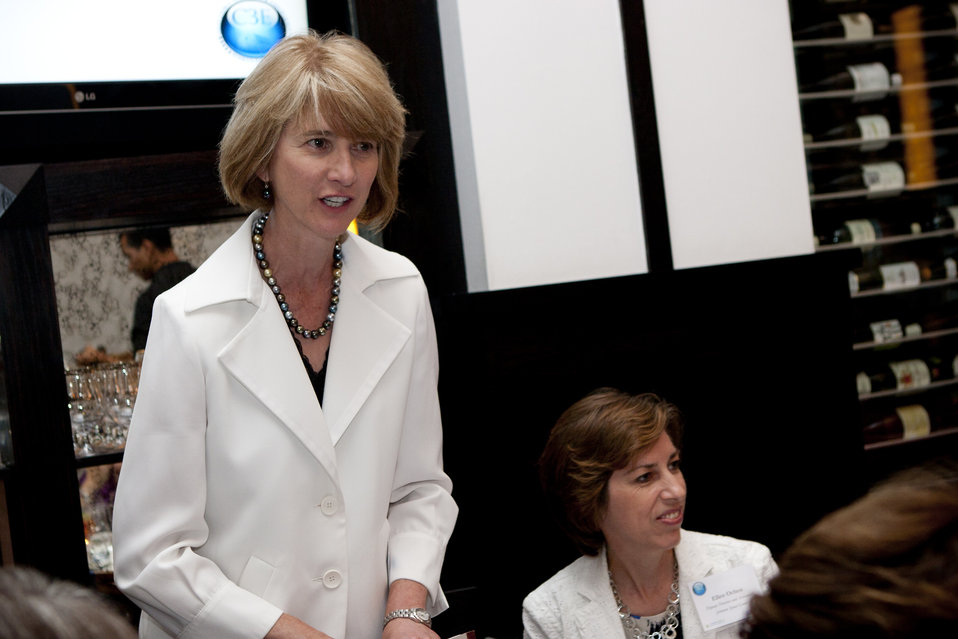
WomenandEnergy 44